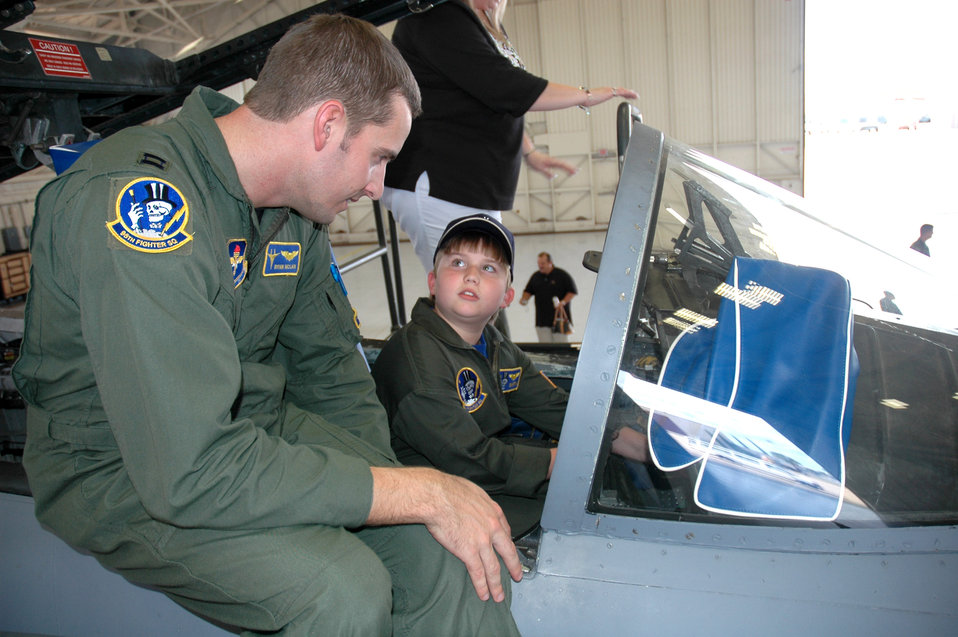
Today's finest teach tomorrow's pilots

Capt. Ryan McLain explains to Dustin Murdock how some of the hundreds of switches operate in the cockpit of an F-15 Eagle during the Pilot for a Day program Oct. 2 at Tyndall Air Force Base, Fla.. Captain McLain is a pilot with the 95th Fighter Squadron.